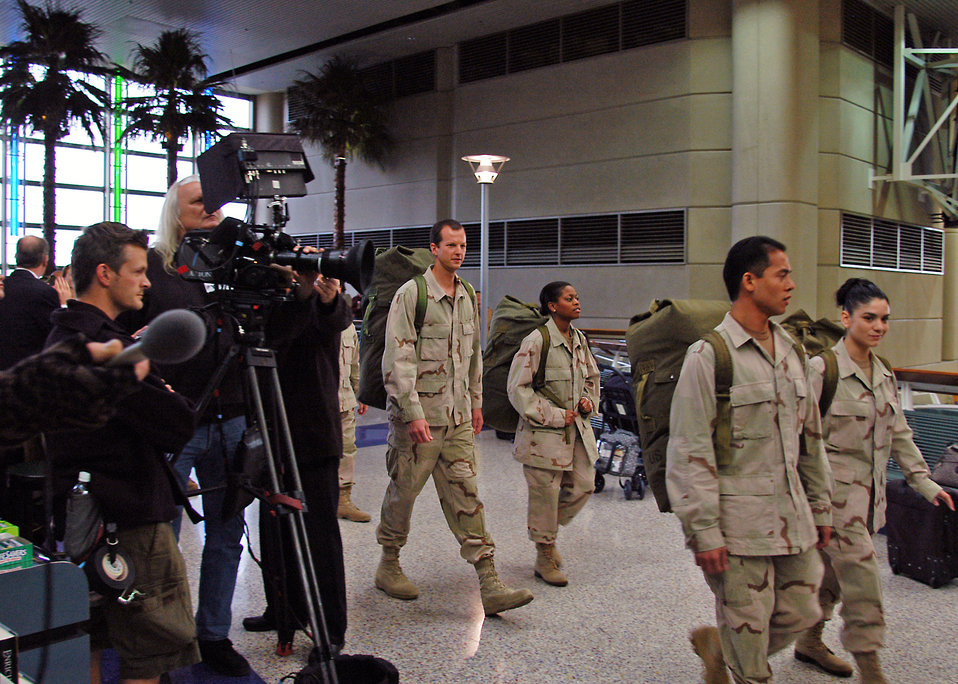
Super Bowl commercial spotlights Airmen

LOS ANGELES -- First Lt. Jeff McGowan, center, enters the international terminal at Los Angeles International Airport with other servicemembers during the filming of a commercial scheduled to air during the Super Bowl. Lieutenant McGowan is an engineer at the Space and Missile Systems Center at nearby Los Angeles Air Force Base.